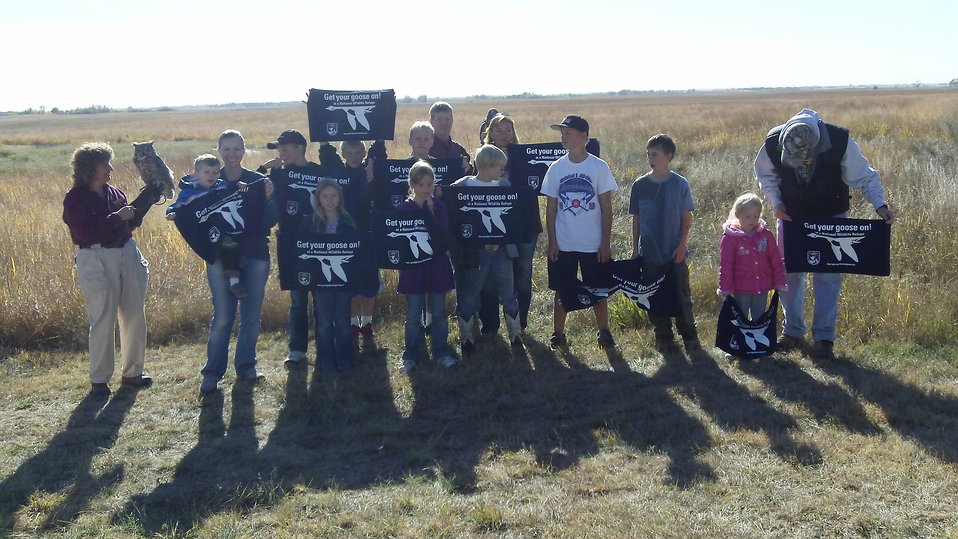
Get Your Goose On! - Raptor Style!

During Huron Wetland Management District's 2012 Prairie Festival, visitors were treated to an up close and personal look at various birds of prey.